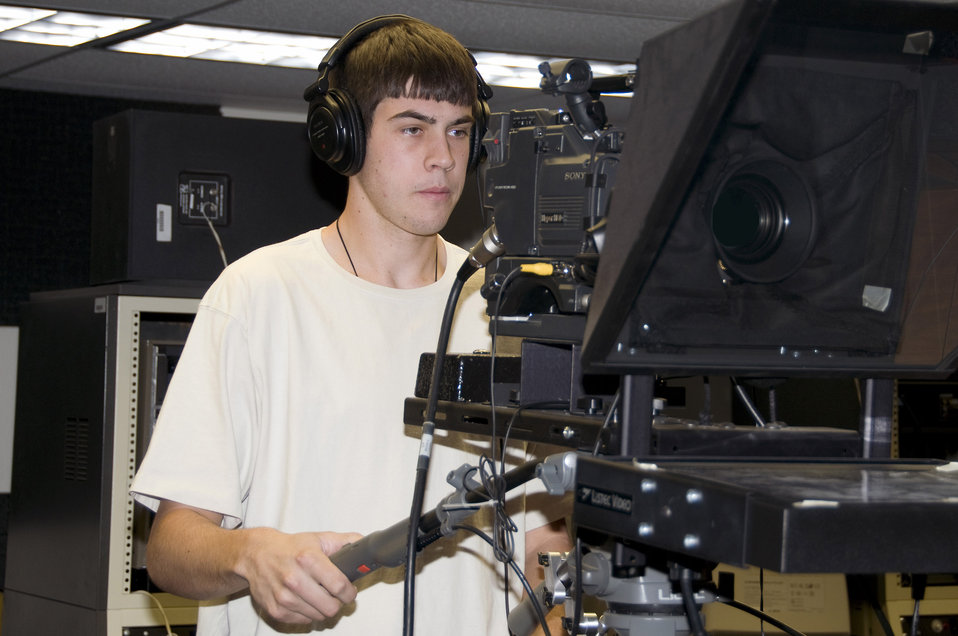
AFOTEC launches student intern program

During a filming session, Ethan Halliday operates the camera as part of his duties as a student intern with the Air Force Operational Test and Evaluation Center at Kirtland Air Force Base, N.M. The intern program partners AFOTEC with the University of New Mexico to recruit students and expose them to government service, particularly in shortage career fields.